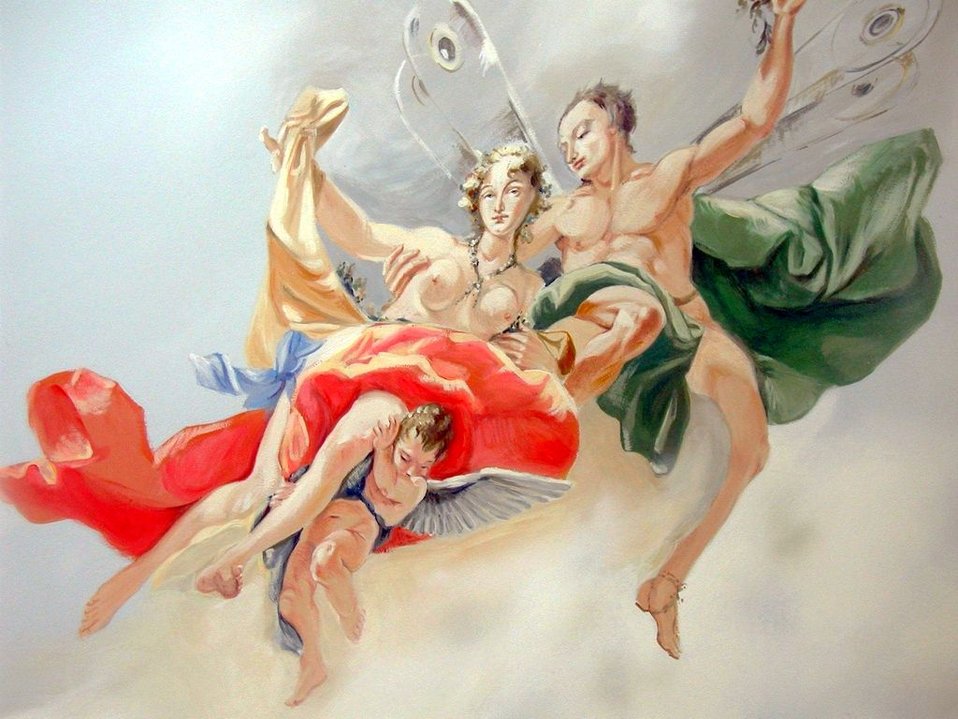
Stropná maľba v kupole Licencovanie: Autorom fotografie je Imrich Šimonek z Dubníka sk:Kategória:Presunúť na Commons